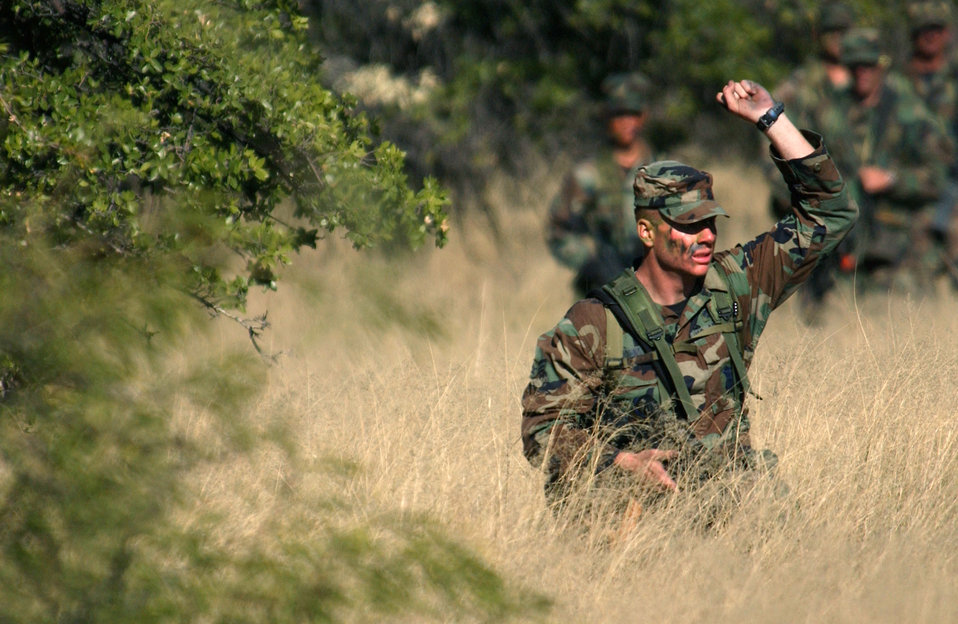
Defender Challenge 2004

FORT HUACHUCA, Ariz. -- Airman 1st Class Jason Johnston signals team members to freeze upon sighting enemy vehicles during a tactics training exercise Oct. 13. Members of the U.S. Air Forces in Europe Defender Challenge team are spending three weeks here in preparation for the 2004 Defender Challenge competition. Defender Challenge held at Lackland Air Force Base, Texas, is a security forces competition pitting competitors from major commands against one another over a series of events including marksmanship, tactics and physical fitness. Airman Johnston is assigned to the 48th Security Forces Squadron, Royal Air Force Lakenheath, England.